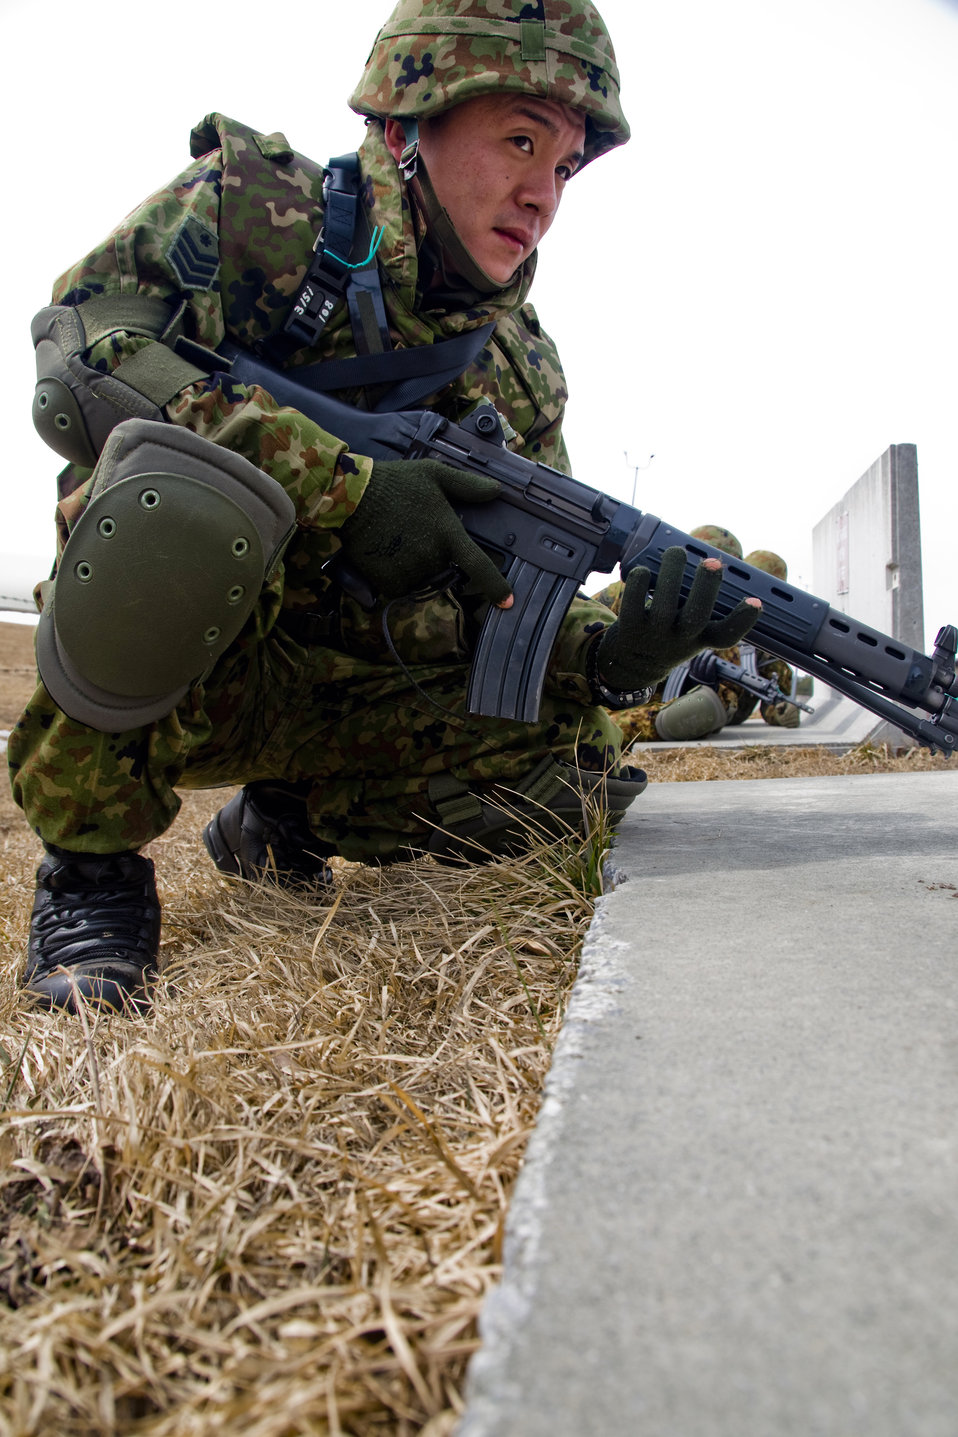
Japan, U.S. forces come together to Guard, Protect

A member of the Japan Ground Self-Defense Force, 9th Division, 5th Infantry Regiment, holds his position during an Exercise Guard and Protect scenario March 13 at Misawa Air Base, Japan. The exercise purpose was to get Japanese forces familiar with the security roles they would face when responding to an on-base incident.